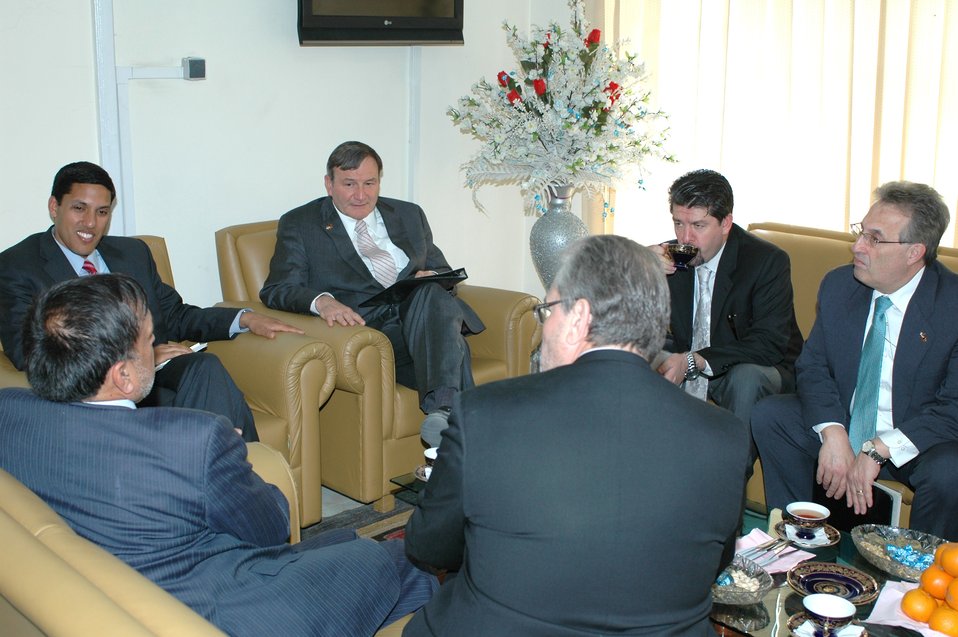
DDP MOU Preparation